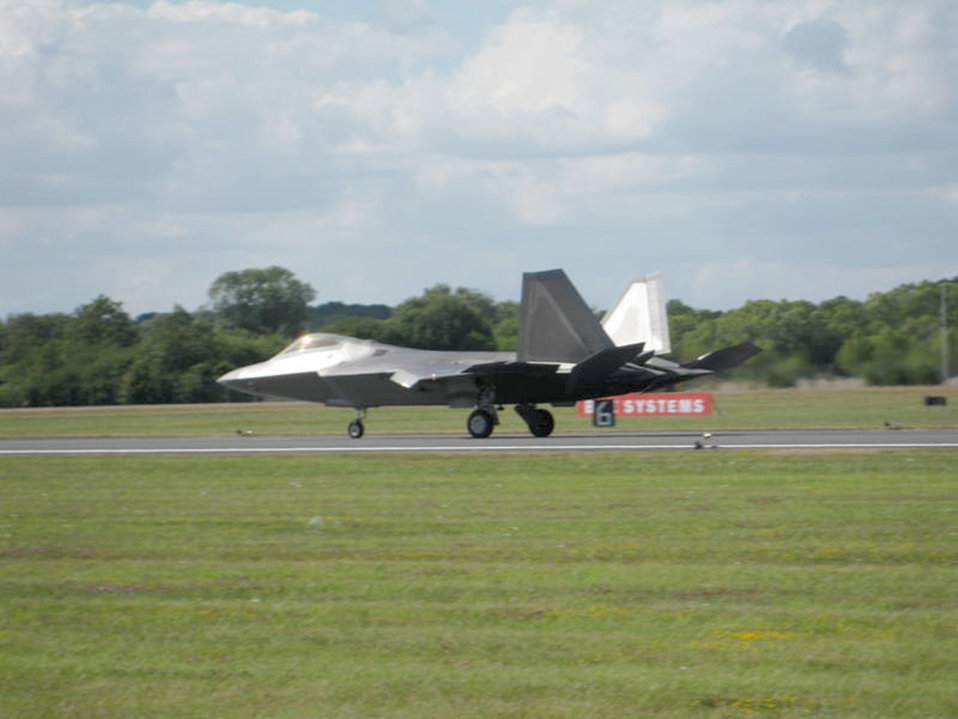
'Royal International Air Tattoo'

Maj. Dave Skalicky lands after an aerial demonstration of an F-22A Raptor during the Royal International Air Tattoo July 17, 2010, at Royal Air Force Fairford, England. Major Skalicky is the F-22 Demonstration Team pilot. The Raptor is based out of Joint Base Elmendorf-Richardson, Alaska.